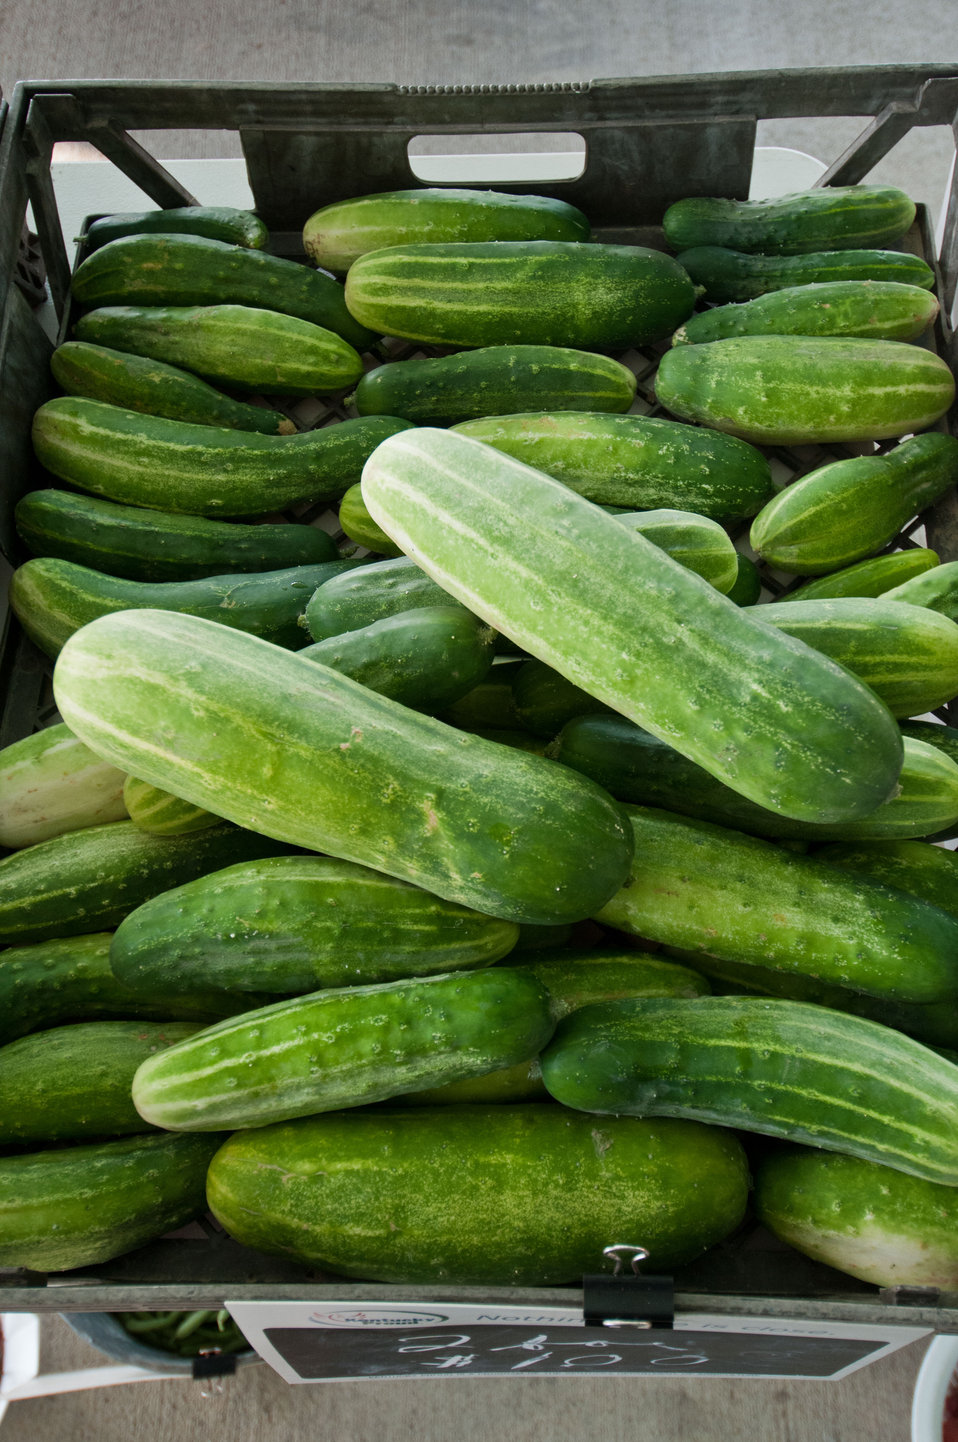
Cucumbers for sale at the Bath County Agricultural Education and Marketing Center, Owingsville, KY, on Friday, July 15, 2011. The Center was the recipient of a $400,000 Rural Business Enterprise Grant. It has given farmers and producers from Bath and surrounding counties the opportunity to manufacture and market their locally grown and locally produced value-added and “Kentucky Proud” branded products, including but not limited to, fresh produce, artisan crafts and specialty food products. The Center is open year-round and allows residents to sell products in four different retail categories, including Kentucky products, regional crafts, “green” groceries and bakery/deli. Several producers expressed their gratitude for Rural Development’s assistance in making the center a reality. The project was made possible through funding the American Recovery and Reinvestment Act of 2009 enacted by the 111th United States Congress in February 2009 and signed into law on February 17, 2009, by President Barack Obama.